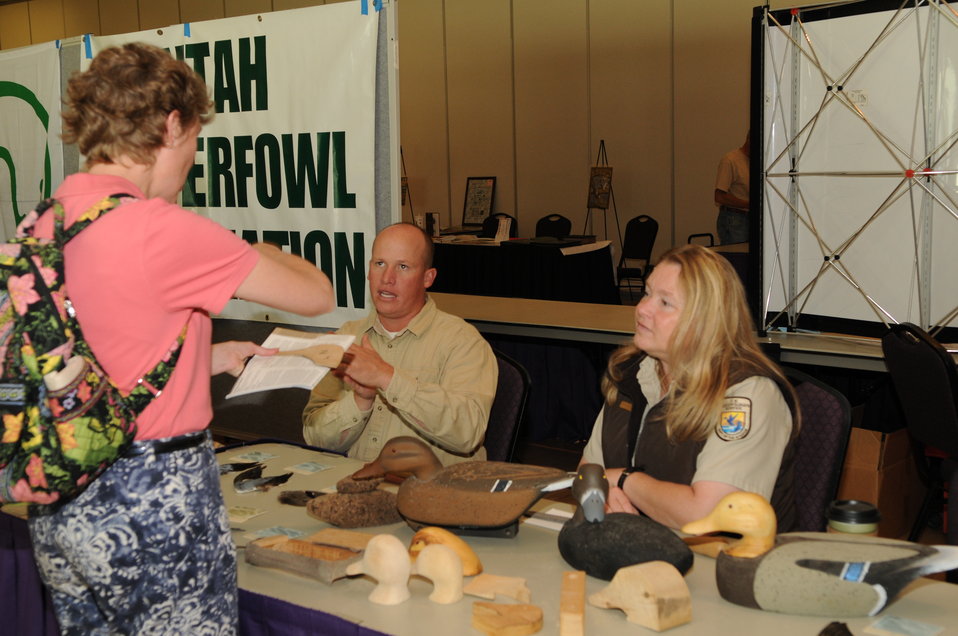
Outreach

The U.S. Fish & Wildlife Service sponsored the 2012 Federal Duck Stamp Art Contest September 28 and 29 in Ogden, Utah, at Weber State University. A panel of five judges was responsible for choosing the art work used to design the 2013-2014 Migratory Bird Hunting and Conservation Stamp.